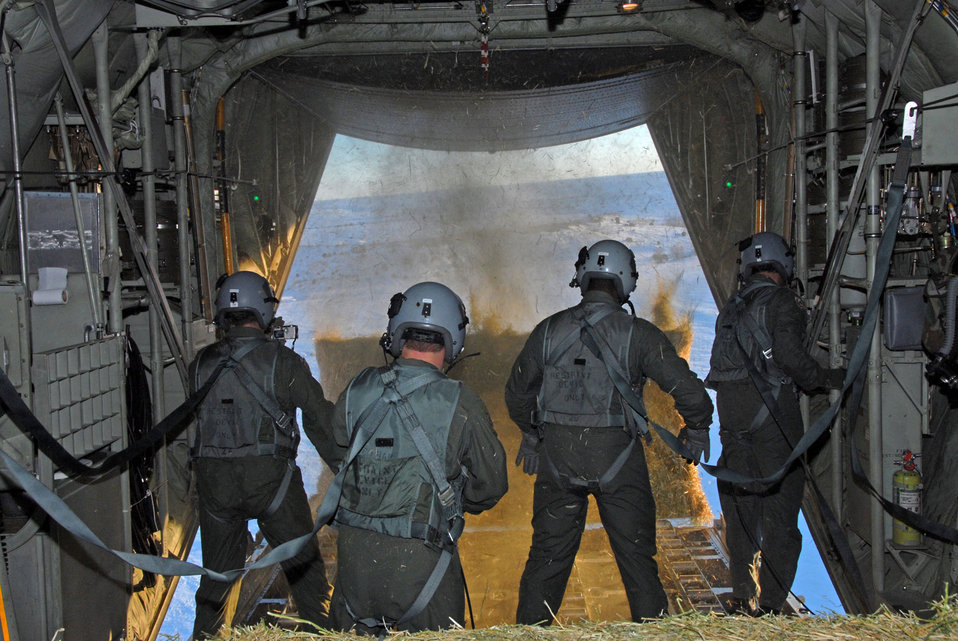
Emergency feeding mission

Members of the Wyoming Air National Guard drop one-ton bales of hay from a C-130 Hercules over southeast Colorado to help stranded livestock Jan. 3. The two-day mission has brought support from Colorado and Wyoming to help livestock stranded by a snowstorm that left 5-foot drifts of snow. The 60,000 stranded cattle need food to survive until ranchers can reach them.